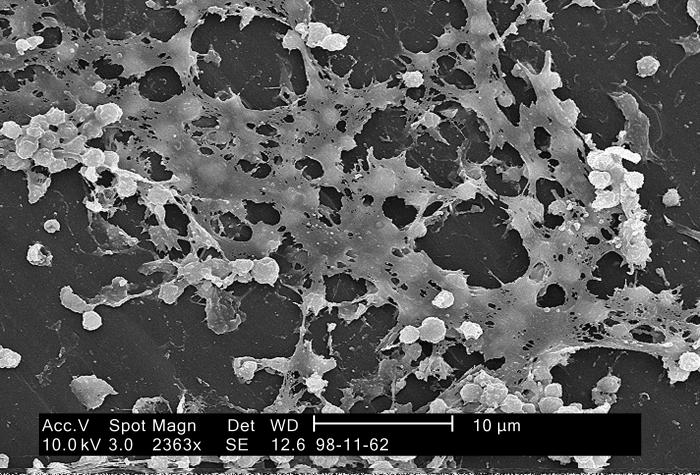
This highly magnified electron micrograph depicted numbers of Staphylococcus aureus bacteria, which were fond on the luminal surface of an indwelling catheter. Of importance is the sticky-looking substance woven between the round cocci bacteria, which was composed of polysaccharides, and is known as 'biofilm'. This biofilm has been found to protect the bacteria that secrete the substance from attacks by antimicrobial agents such as antibiotics; Magnified 2363x.S. aureus, often referred to simply as "staph," are bacteria commonly carried on the skin, or in the nose of healthy people. Approximately 25% to 30% of the population is colonized, i.e., when bacteria are present, but not causing an infection, in the nose with staph bacteria.